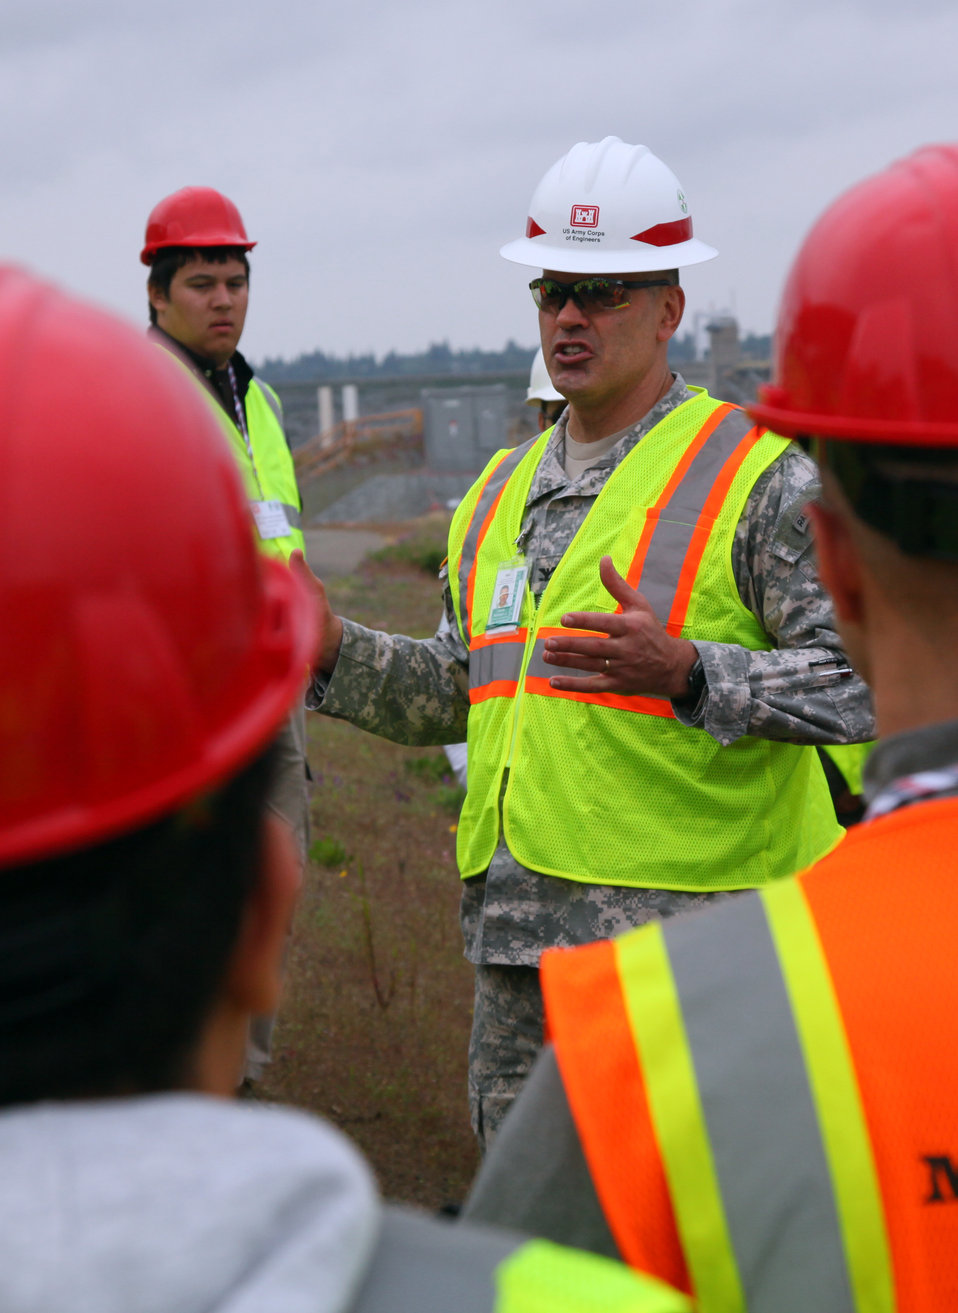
Sacramento State engineering students get a Folsom site tour

Col. Bill Leady, commander of the U.S. Army Corps of Engineers Sacramento District, greets engineering students from California State University-Sacramento at Folsom Lake in Folsom, Calif., April 25, 2012. Corps personnel from the Folsom Dam Joint Federal Project provided a tour of the construction site for the auxiliary spillway to the future engineers.